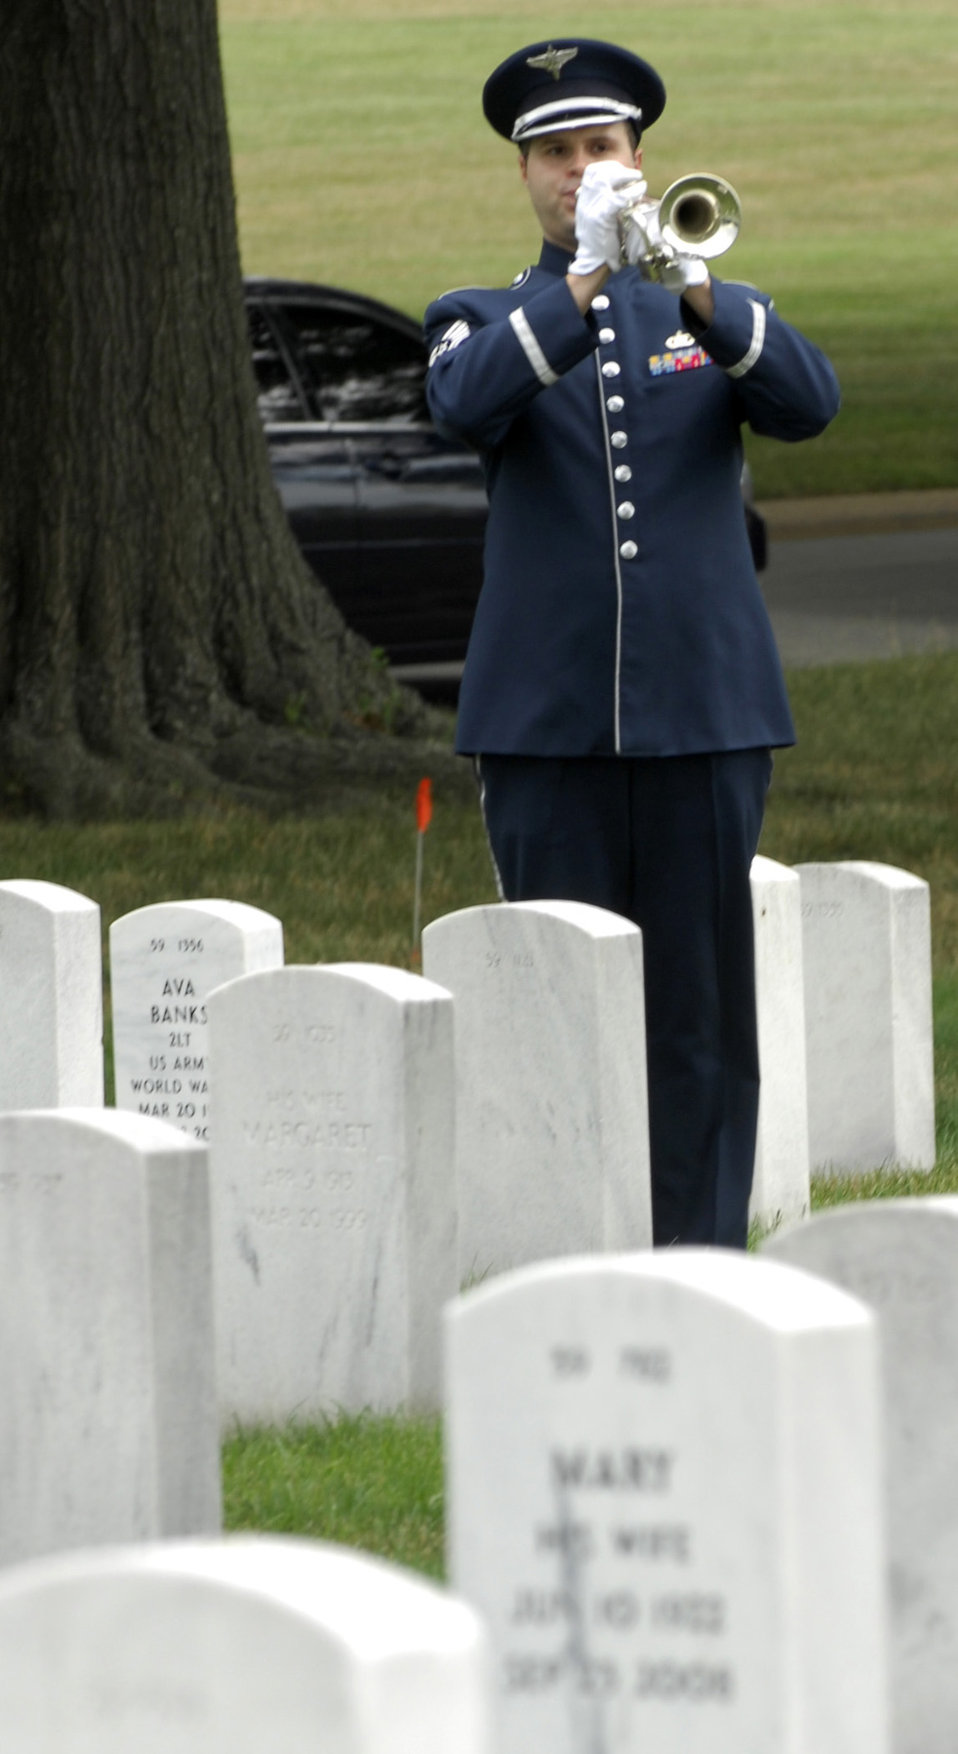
Remembrance

Tech. Sgt. Patrick McDermott, of the U.S. Air Force Band, plays